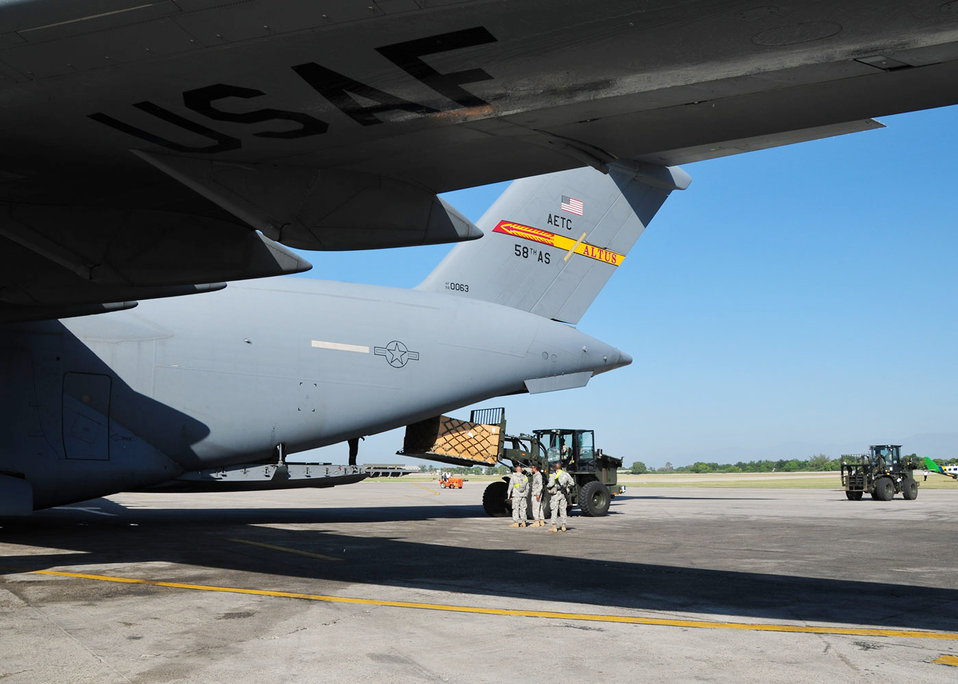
Delivering hope, relief

Airmen and Soldiers already on the ground at the Toussaint L'Ouverture International Airport in Port-au-Prince, Haiti assist in offloading vehicles from an Altus Air Force Base, Okla., C-17 Globemaster III Jan. 18, 2010. Altus has six aircraft deployed to Pope AFB, N.C., in support of Operation Unified Response to help Haiti recover from an earthquake.